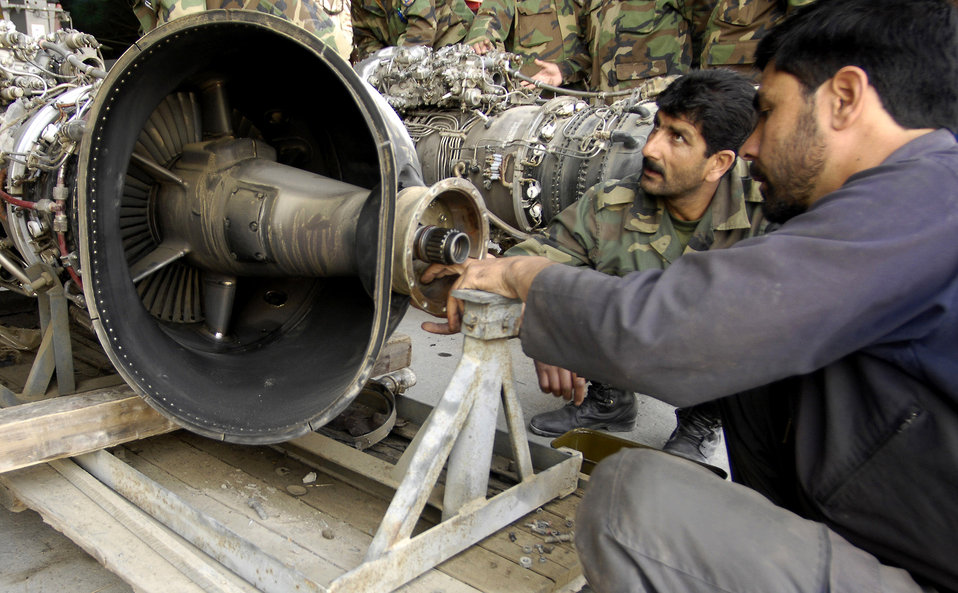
Joint team helps build Afghan air corps

Afghan national army air corps aircraft mechanics work on an engine Oct 18 at Kabul International Airport, Afghanistan. U.S. Air Force Airmen advise and mentor the ANA air corps, helping to rebuild and train its force.